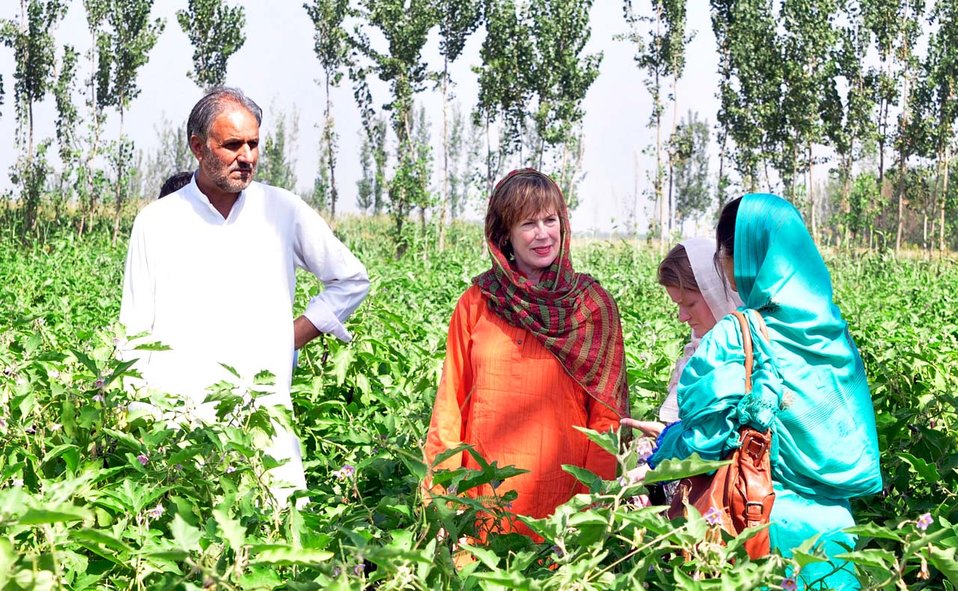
Dr. Marilyn Wyatt's Visit to the Flood-affected Farming Communities in Khyber Pakhtunkhwa